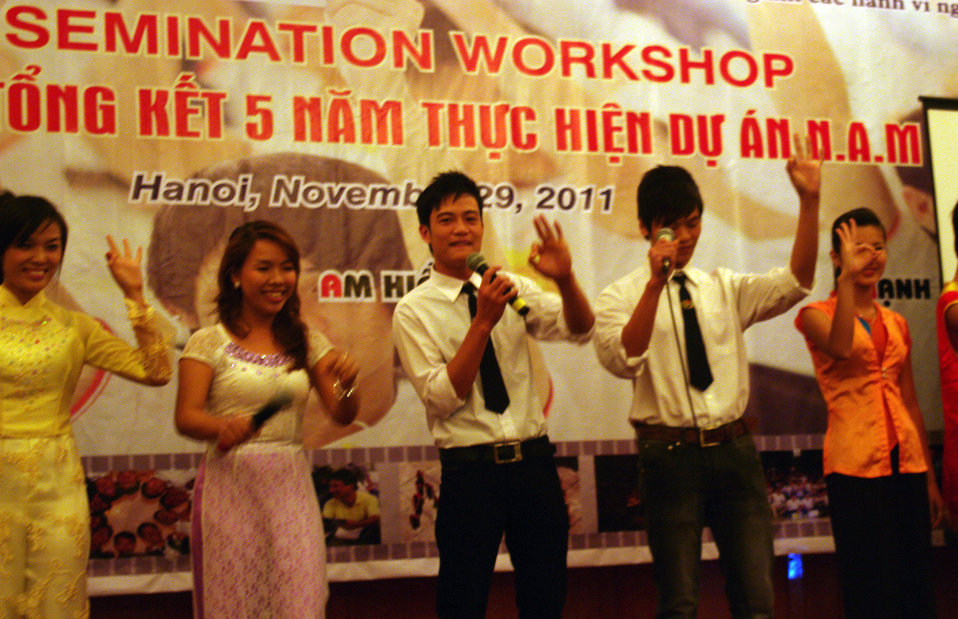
20111129STC Youth Voc Training Dissemination Hanoi RNyberg 5317